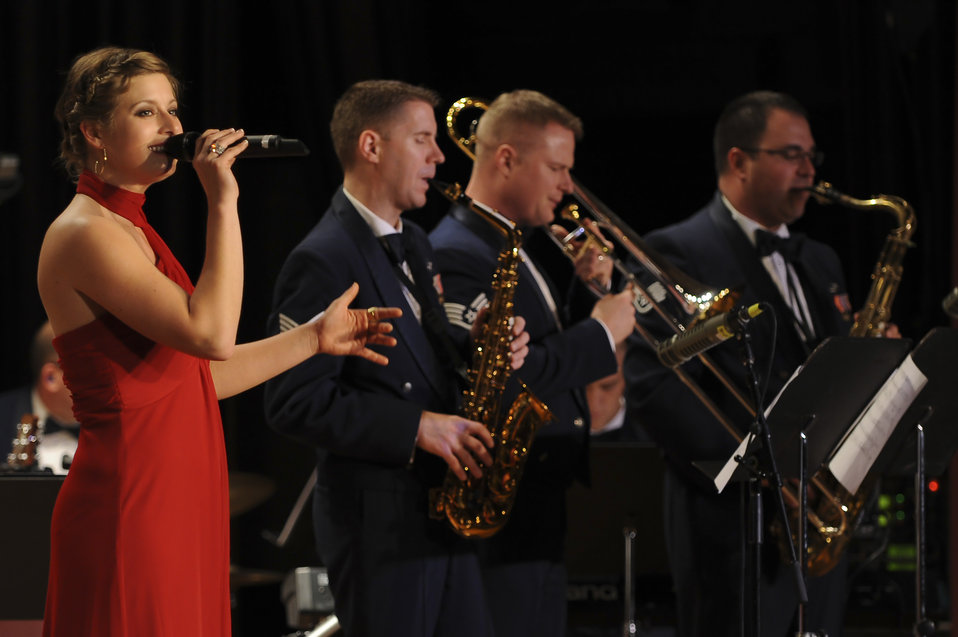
U.S. Air Force Band of Mid-America

Airman 1st Class Carmen Emborski, U.S. Air Force Band of Mid-America vocalist, performs a solo at the holiday concert in Belleville, Ill., Dec. 8, 2009. The concert included 11 songs performed by the band and a crowd sing-a-long.